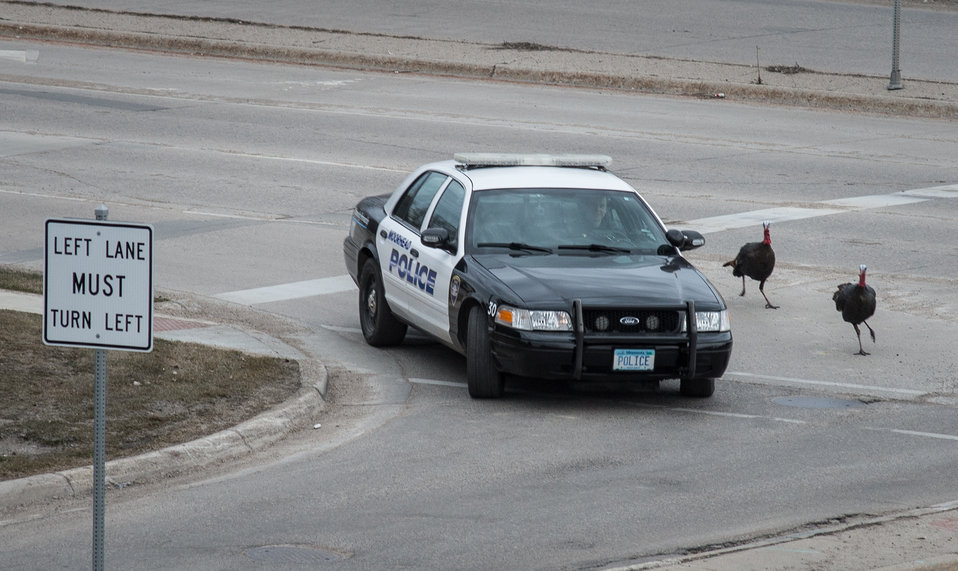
Wild turkeys chase a police car in Moorhead, MN, on Monday, Apr. 29, 2013. Turkeys are not uncommon in the riparian zone along the Red River, but due to rising floodwaters, they are forced out and into busy city streets near a shopping mall. To learn about the Red River Basin Initiative, see www.mn.nrcs.usda.gov/news/features13/RRBI.html.